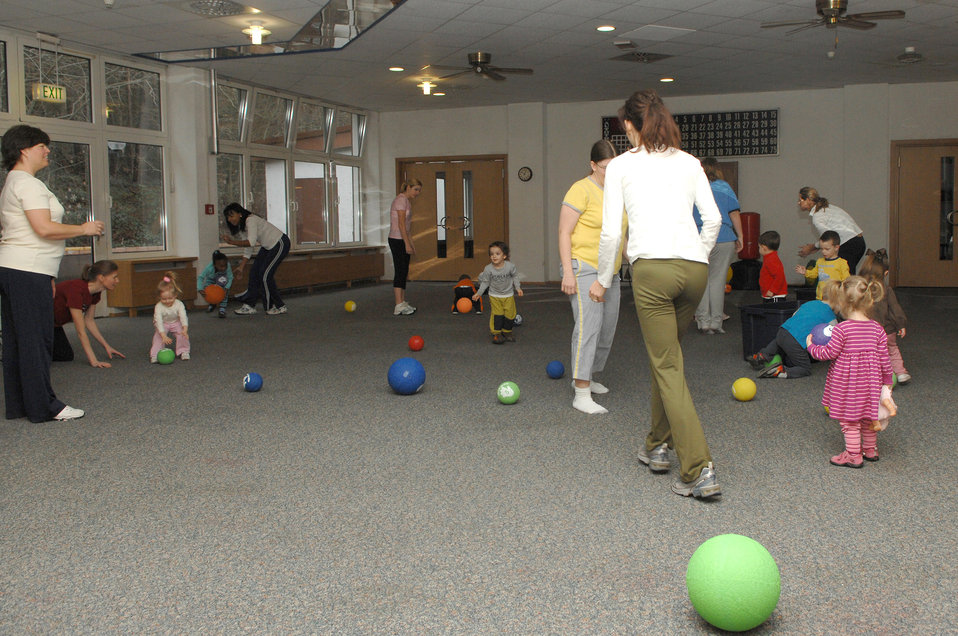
Children, parents get fit together

At the beginning of the Mommy and Me Yoga and Fitness class, playground balls are thrown throughout the room as the children hurry to pick them up and place them back in the bins, Jan.18, at the Vogelweh Community Center. This is one of the many activities done to get the children warmed up for the class.